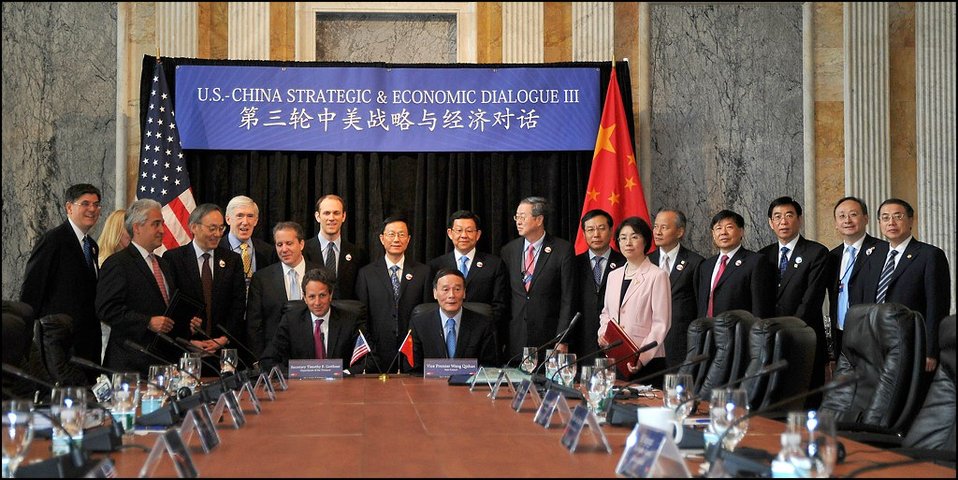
U.S.-China Strategic and Economic Dialogue

Delegates to the economic track of the U.S.-China Strategic and Economic Dialogue after the signing ceremony on Tuesday at the Treasury Department.